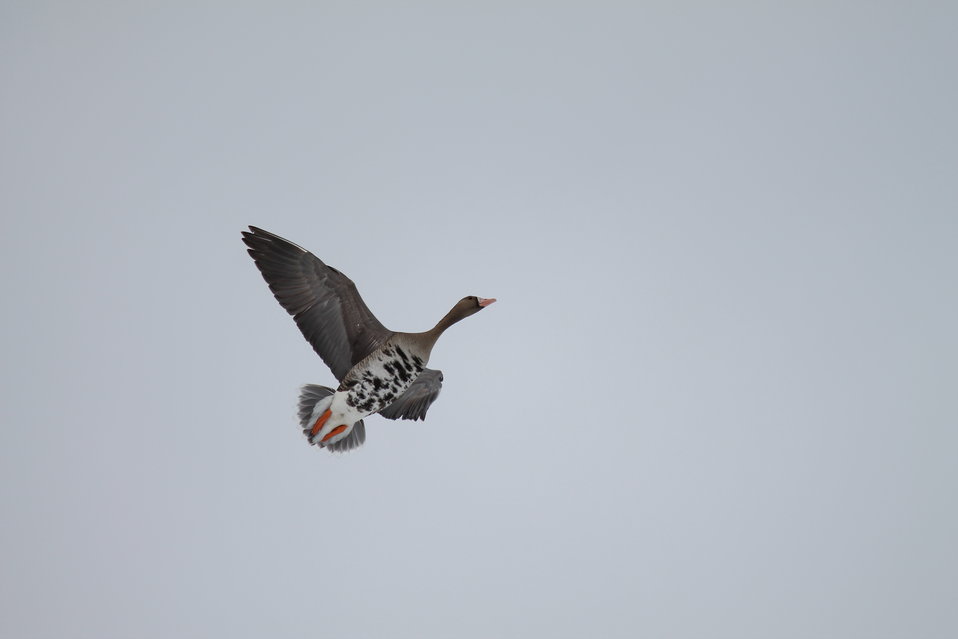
Speckled Belly

White-fronted geese are also called Speckled bellies because of the distinct markings on their 'bellies'.

USFWS Yukon Delta NWR